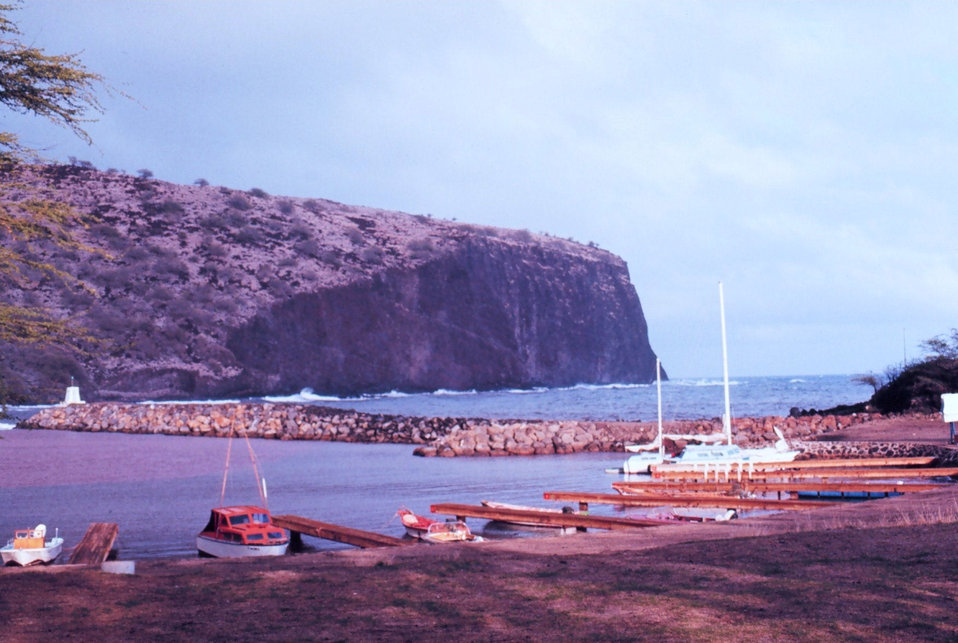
The harbor at Lanai